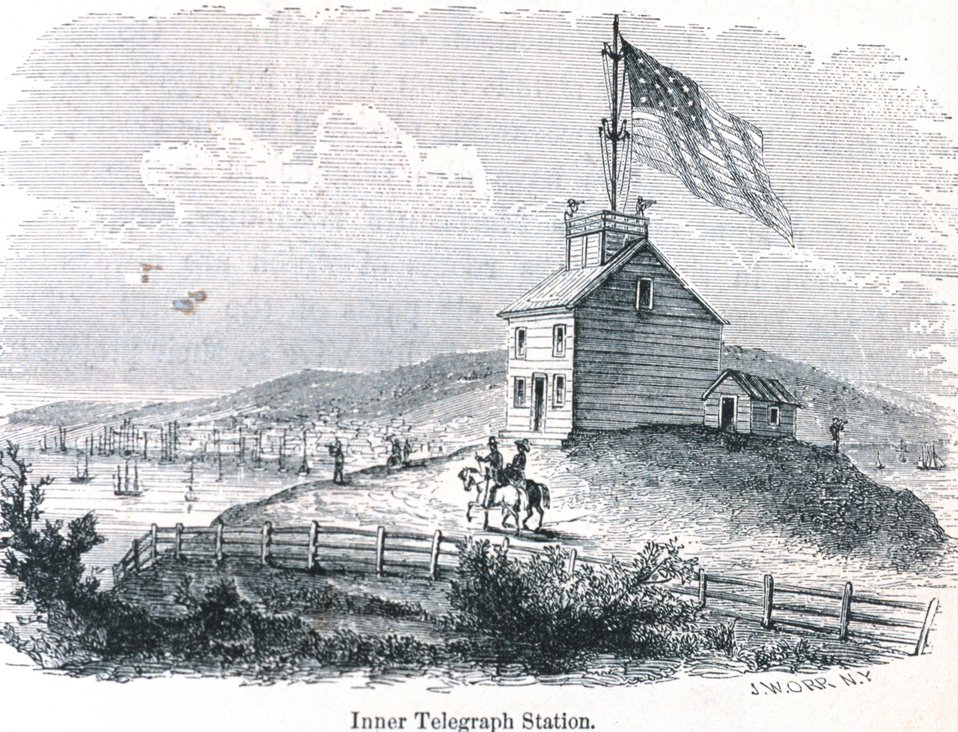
The inner telegraph station. In: 'The Annals of San Francisco'. Frank Soule, John Gihon, and James Nesbit. 1855. Page 465. D. Appleton & Company, New York. F869.S3.S7 1855.